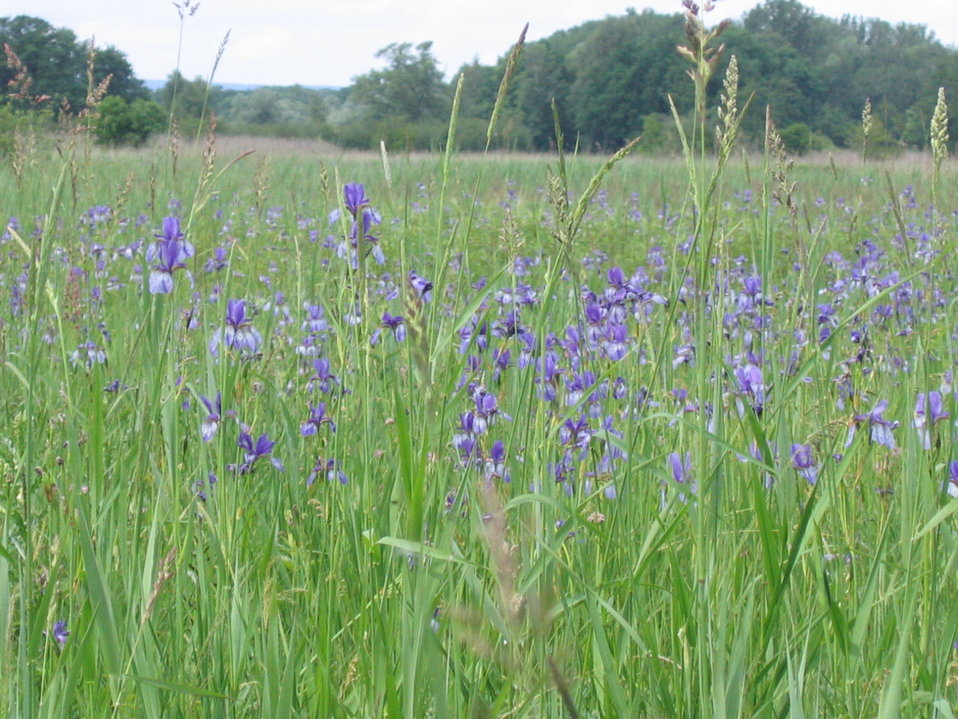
Deutsch: Deutschland - Baden-Württemberg - Bodenseekreis - Eriskirch: Irisblüte im Eriskircher Ried